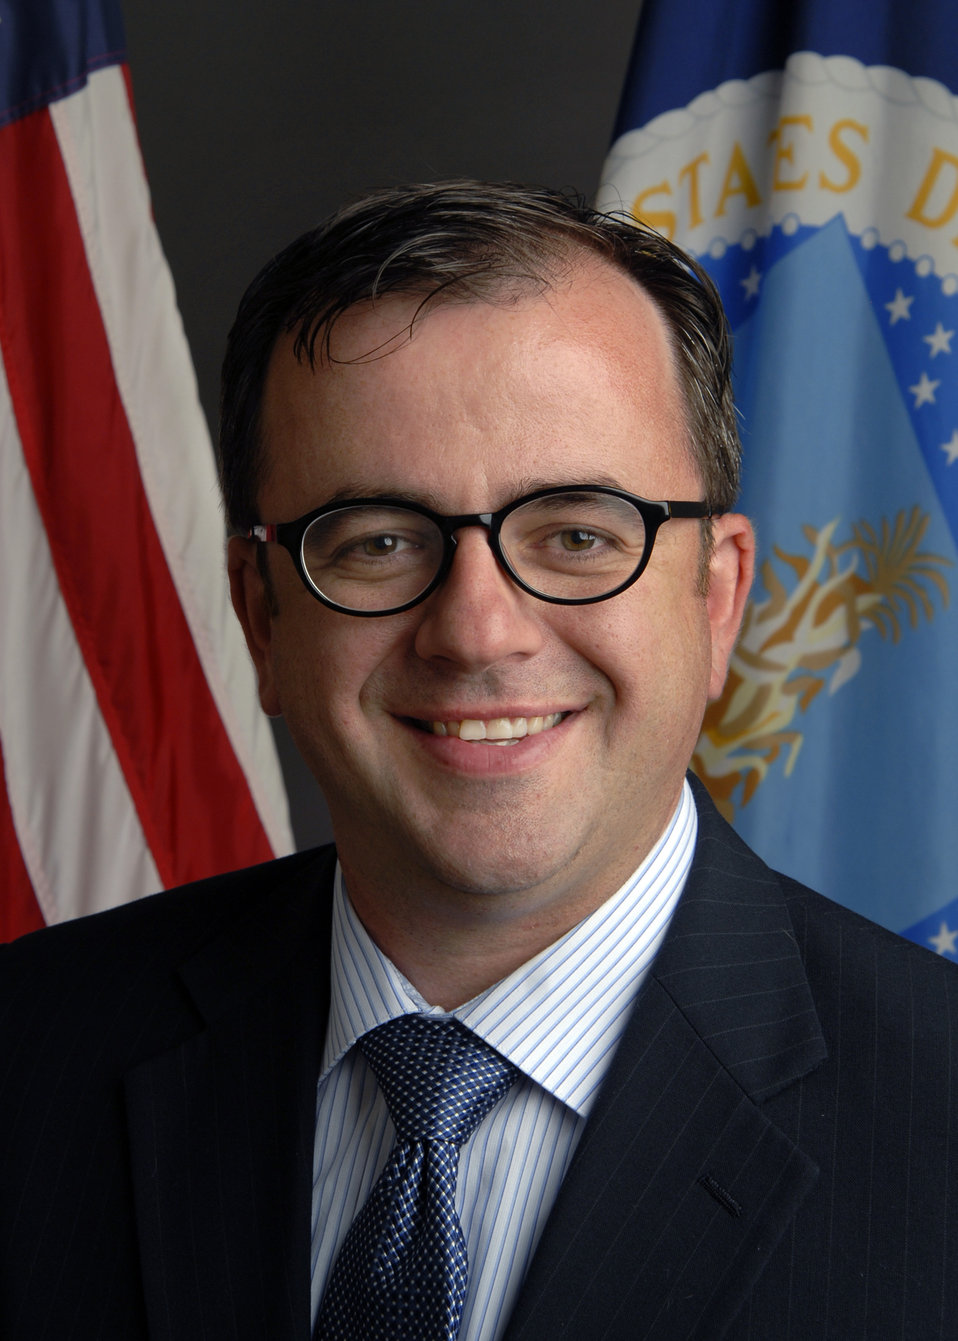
20120724-FSA-KJH-2696 Acting FSA Deputy Administrator for Field Operations John Berge

Acting FSA Deputy Administrator for Field Operations John Berge.